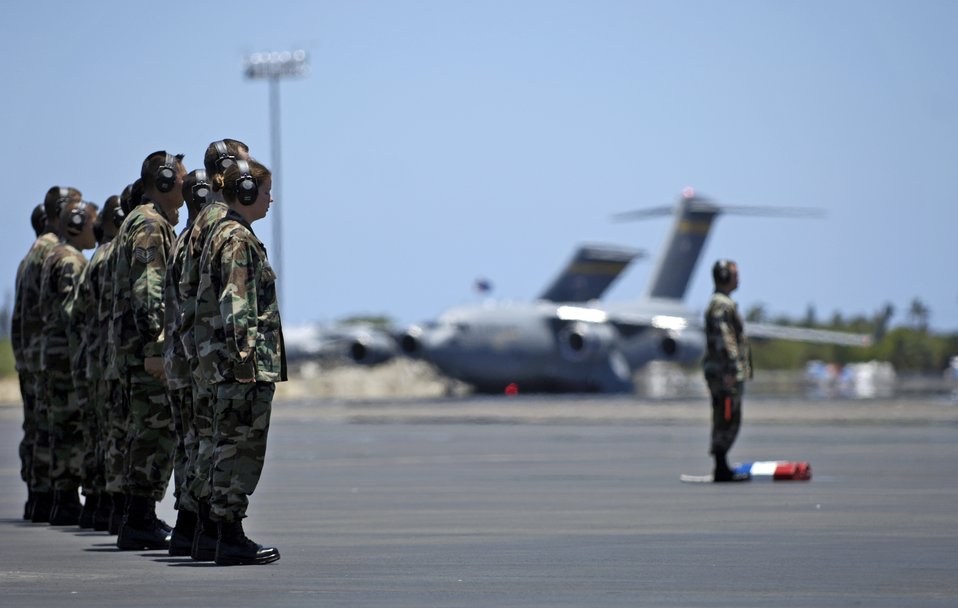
Hickam AFB welcomes its final C-17

Aircraft maintainers stand at attention while waiting for a C-17 Globemaster III to taxi to its parking spot at Hickam Air Force Base, Hawaii, on July 18. The